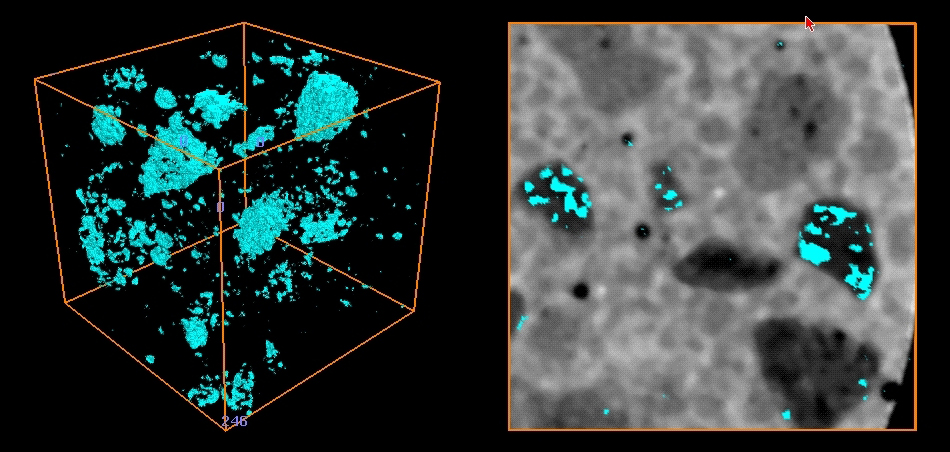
Pore structure of lightweight aggregates

X-ray microtomograph (left) shows pores (blue) that remain within lightweight aggregates (LWAs) after water has migrated from the pre-wetted materials during the first day of hydration. In the two-dimensional image (right), the emptied pores are superimposed over the original microstructure (hydrating cement paste is white, sand is light grey, and LWA is dark grey), illustrating the detailed pore structure of LWA particles.